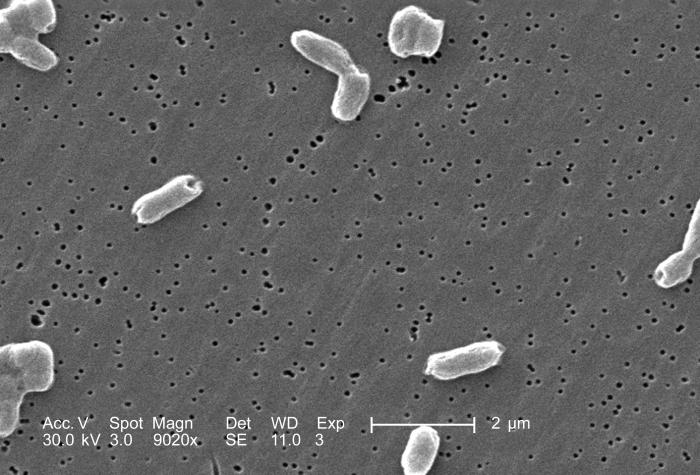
This scanning electron micrograph (SEM) depicts a number of rod-shaped, motile, Gram-negative Salmonella infantis bacteria; Magnification 9020x.